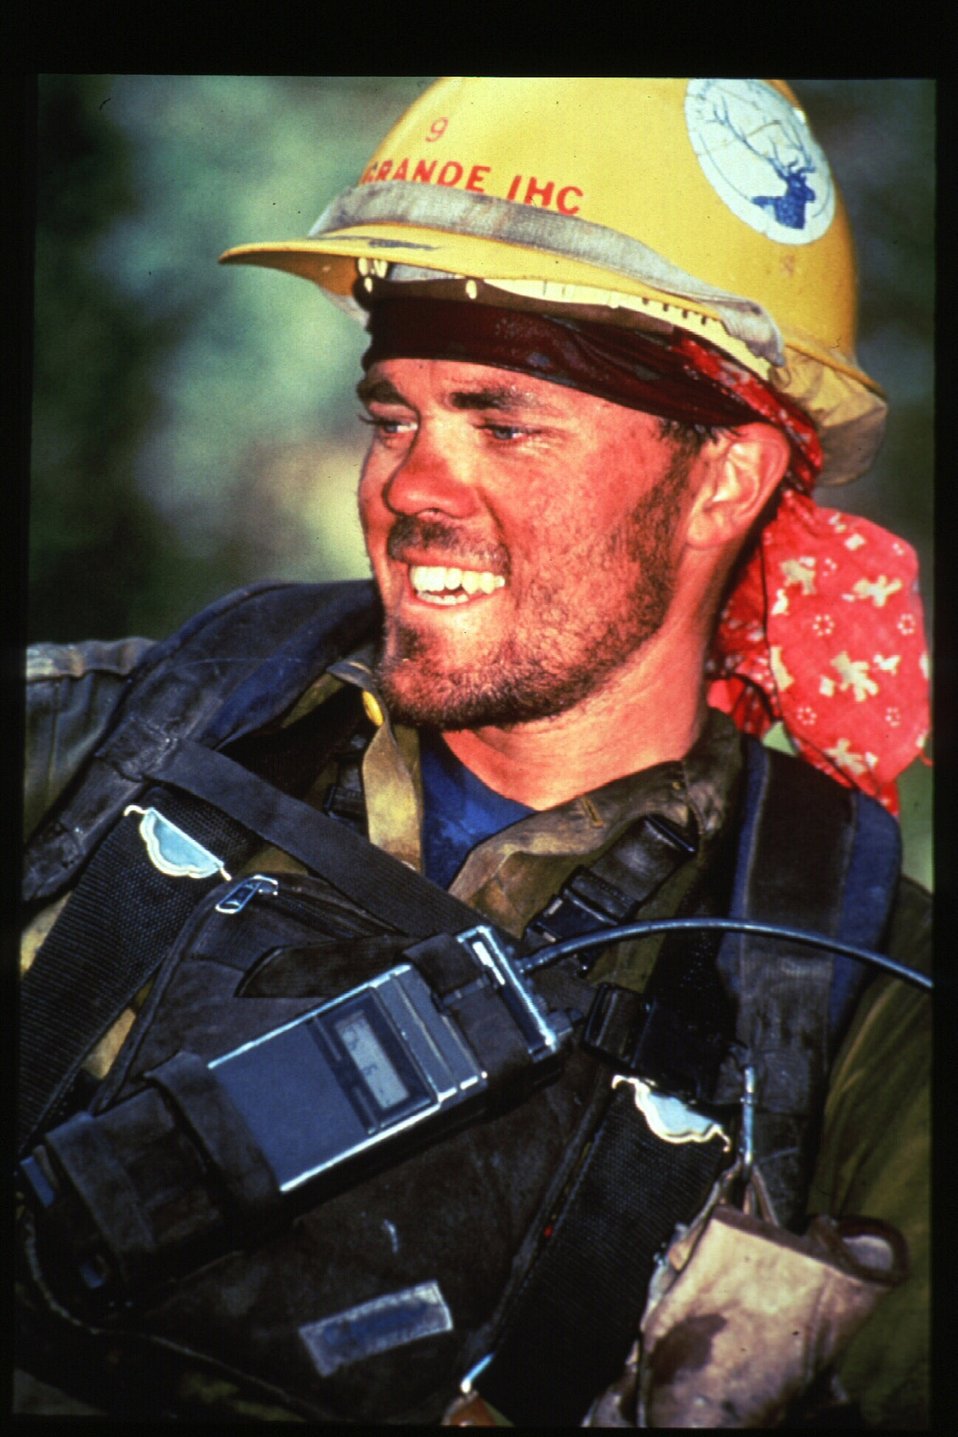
Boise Foothills Fire Danskin Mountains and South Fork of Boise River Wild Fire Fighter Four River Field Office LSRD Lower Snake River District